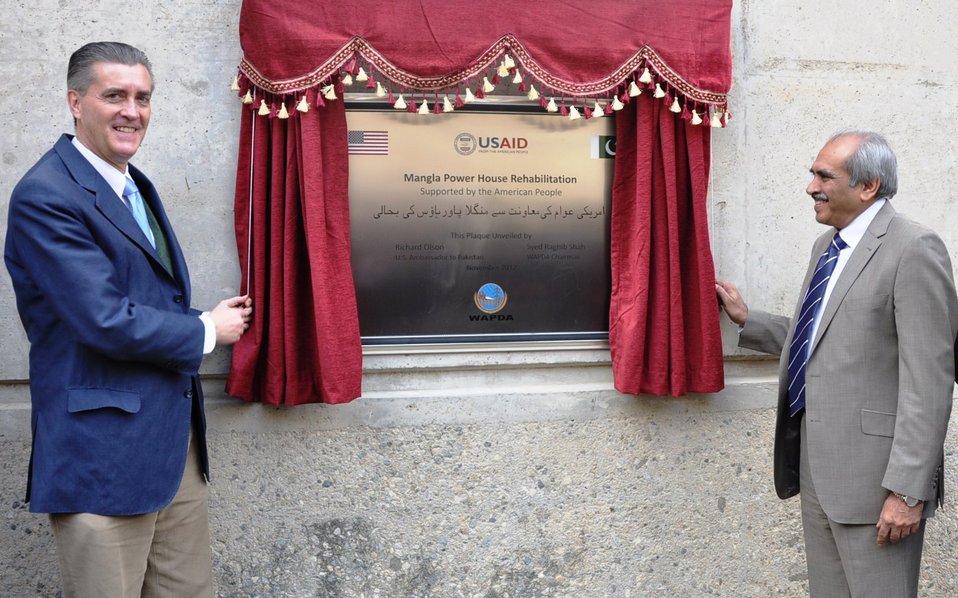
U.S. Ambassador Richard Olson and Wapda Chairman Raghib Shah unveiling the plaque